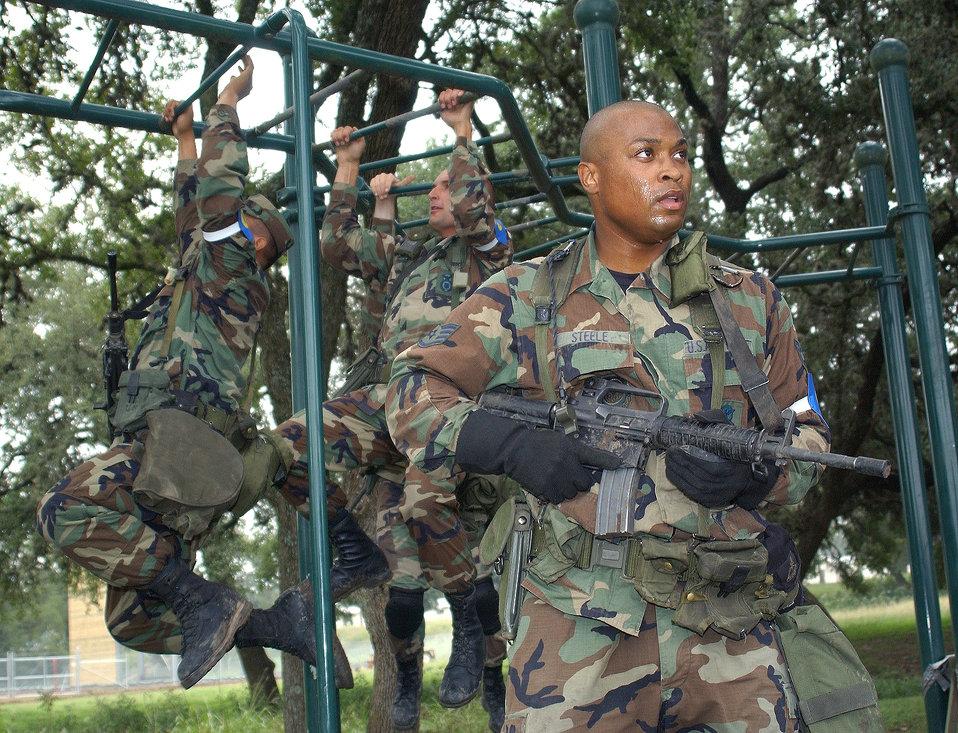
All-stars competing at Defender Challenge 2003

CAMP BULLIS, Texas -- Staff Sgt. Robert Steele provides perimeter defense as fellow members of the Air Force Reserve Command team cross the monkey bar obstacle here during Defender Challenge 2003. This year's competition is taking place Oct. 10 to 16. Defender Challenge pits all-star security forces teams from Air Force major commands, the British Royal Air Force Regiment and the Department of Energy against each other in events highlighting marksmanship, physical endurance, tactics, teamwork and leadership. Steele is from the 439th Security Forces Squadron at Westover Air Reserve Base, Mass.